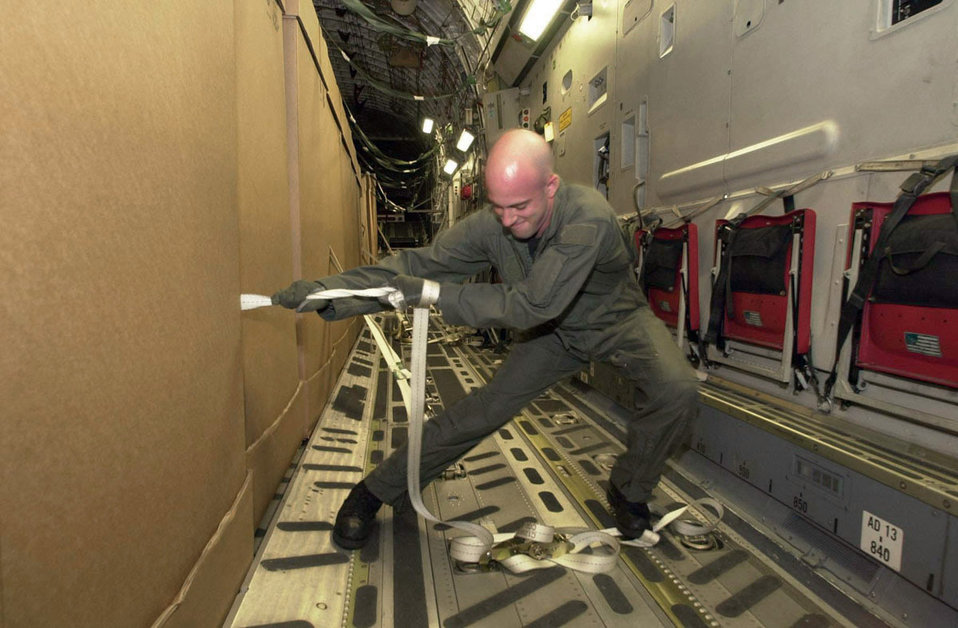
Drop Preperations

OPERATION ENDURING FREEDOM -- U.S. Air Force loadmaster